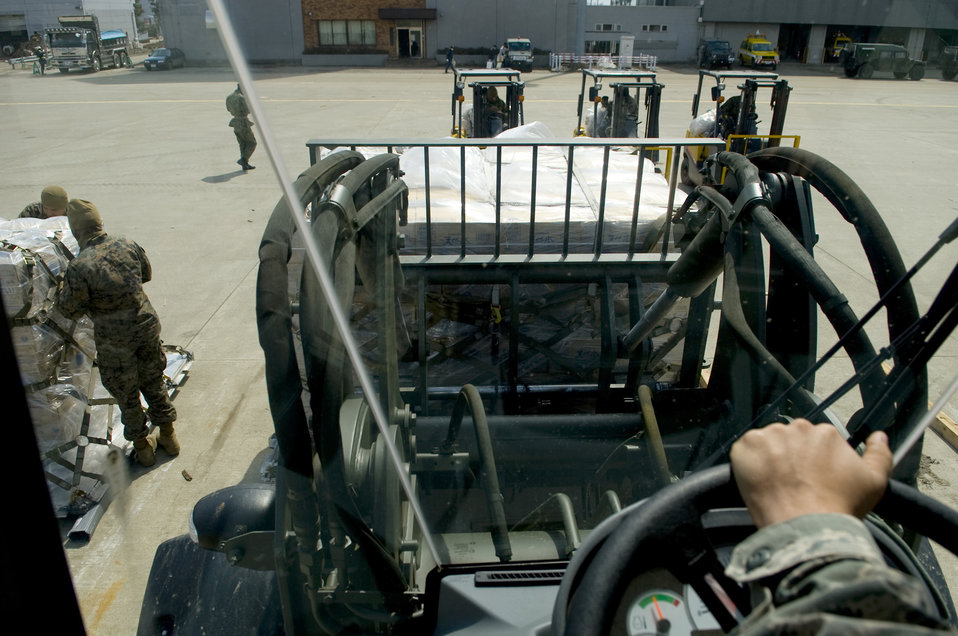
Airmen work with Japanese air controllers

Airmen use forklifts to move pallets of water to a staging area March 26, 2011, at Sendai Airport, Japan.